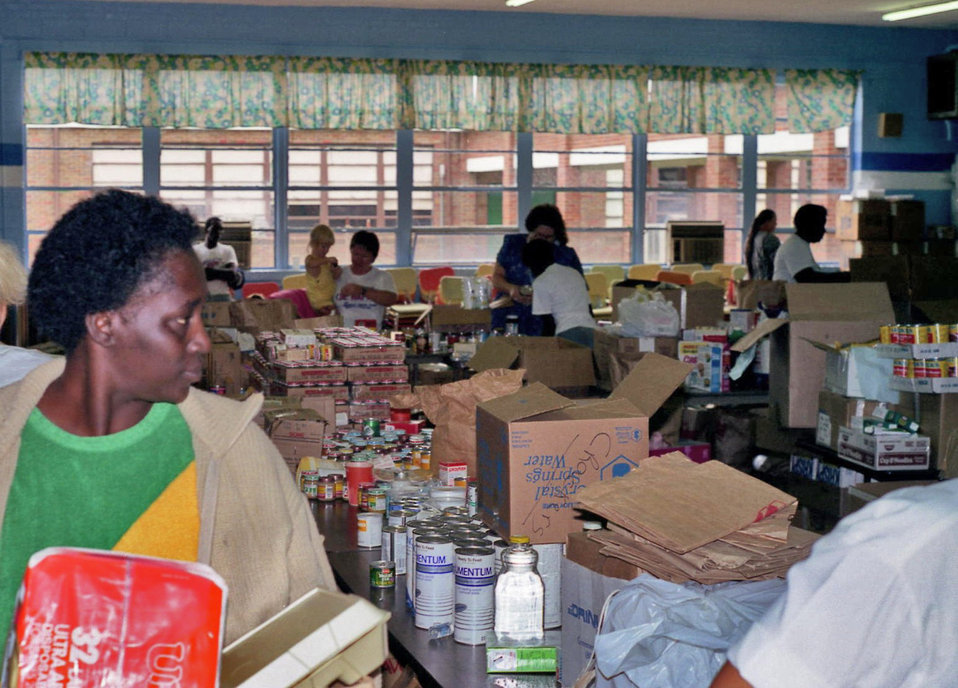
This 1989 photograph showed disaster relief volunteer workers as they were organizing a large supply of food, which was donated to victims of hurricane Hugo.